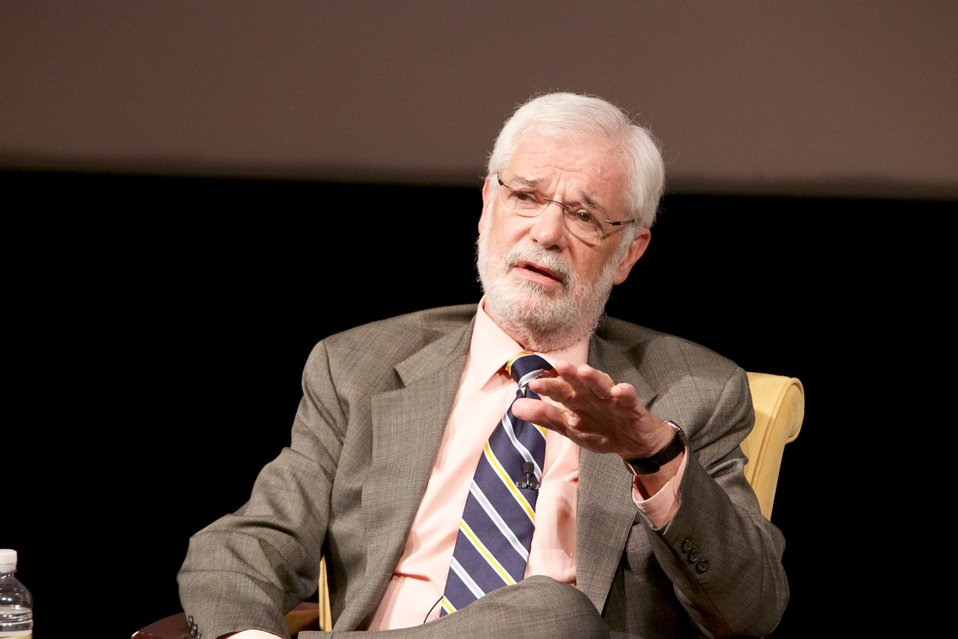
A Nation of Immigrants: How They Shaped America